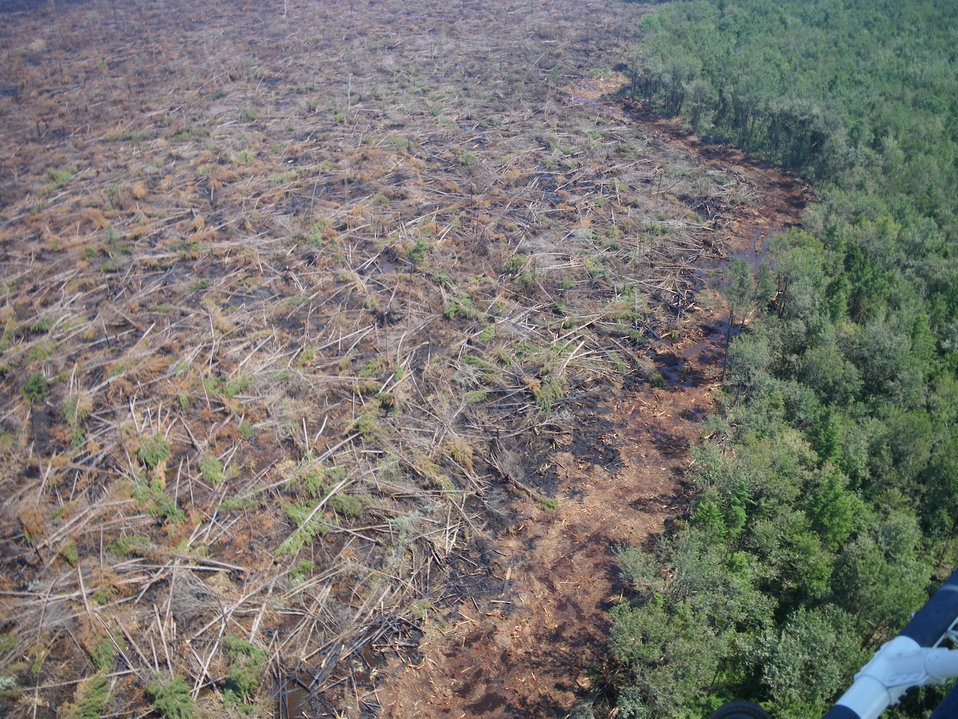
Fire edge post Irene

Suffolk, VA, August 2011: A helicopter flight over the Lateral West Fire burning on Great Dismal Swamp National Wildlife Refuge after Hurricane Irene passed shows jackstrawed fallen trees along the fire's edge. About a foot of rain from the hurricane bumped containment of the fire from 35 to 90 percent.